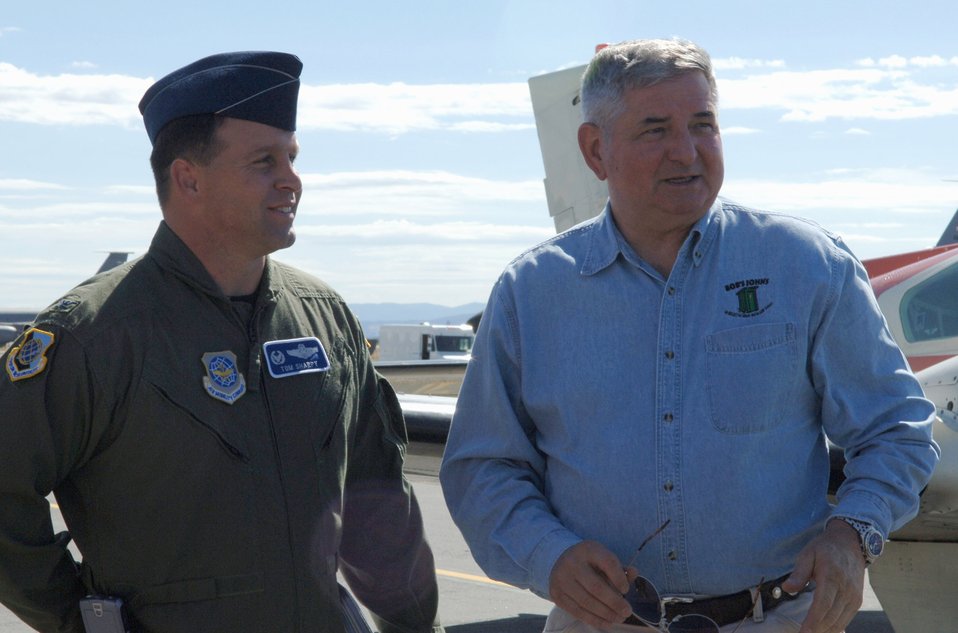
Gen. Fogleman visits Fairchild, praises AMC

Col. Thomas Sharpy greets retired Gen. Ronald R. Fogleman, the former Air Force chief of staff, upon his arrival July 24 to Fairchild Air Force Base, Wash. The general spoke to Airmen during the 92nd Air Refueling Wing's 60th Anniversary Speakers Symposium, a monthly base event celebrating the Air Force anniversary. The general and his wife, Miss Jane, also visited various base organizations and people before leaving July 25. Colonel Sharpy is the 92nd Air Refueling Wing commander.